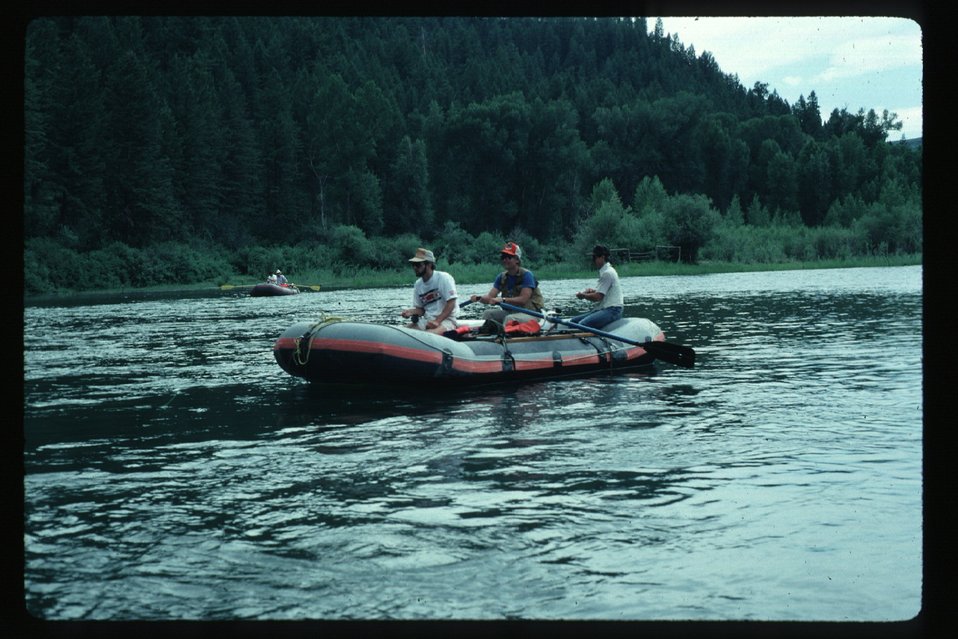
Fishing and rafting South Fork of Snake River Idaho Falls Field Office USRD Upper Snake River District